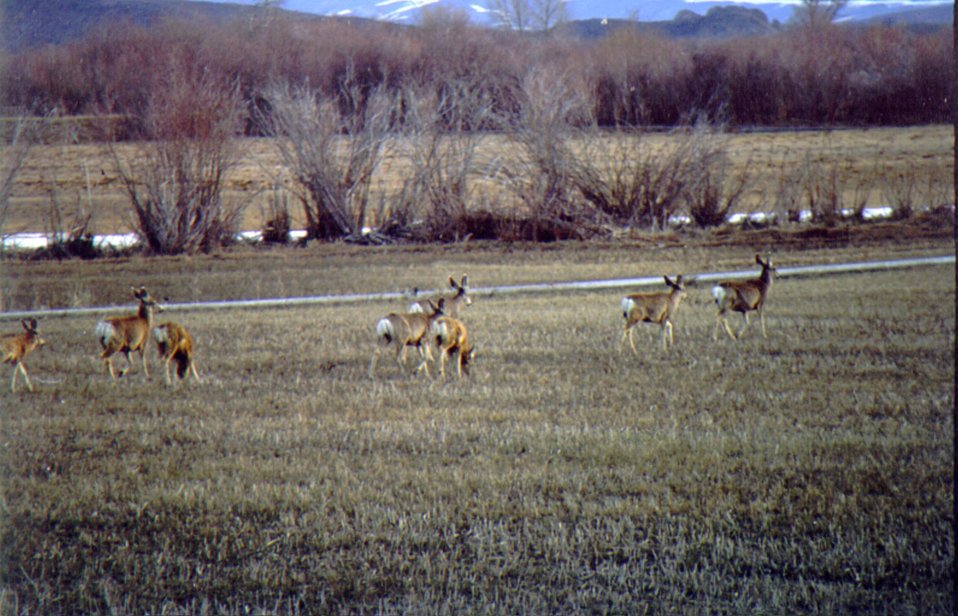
Cokeville Meadows NWR Deer in the Field

Mule deer grazing in the fall at Cokeville Meadows National Wildlife Refuge in southwestern Wyoming.